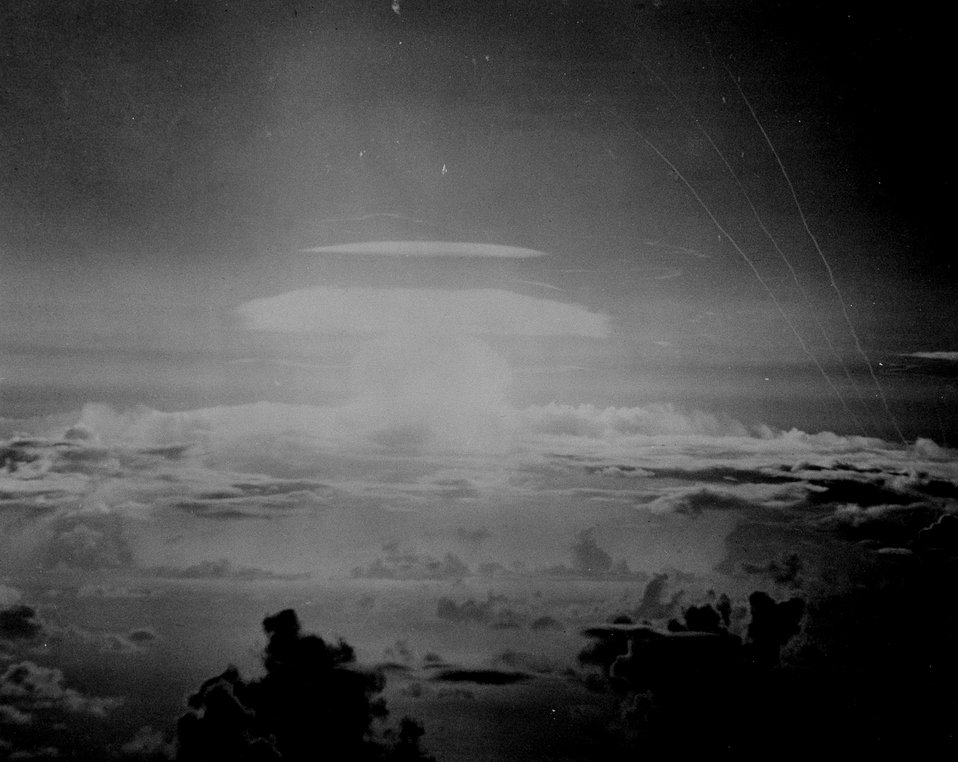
Fireball of the May 21, 1956 test detonation over Bikini Atoll.